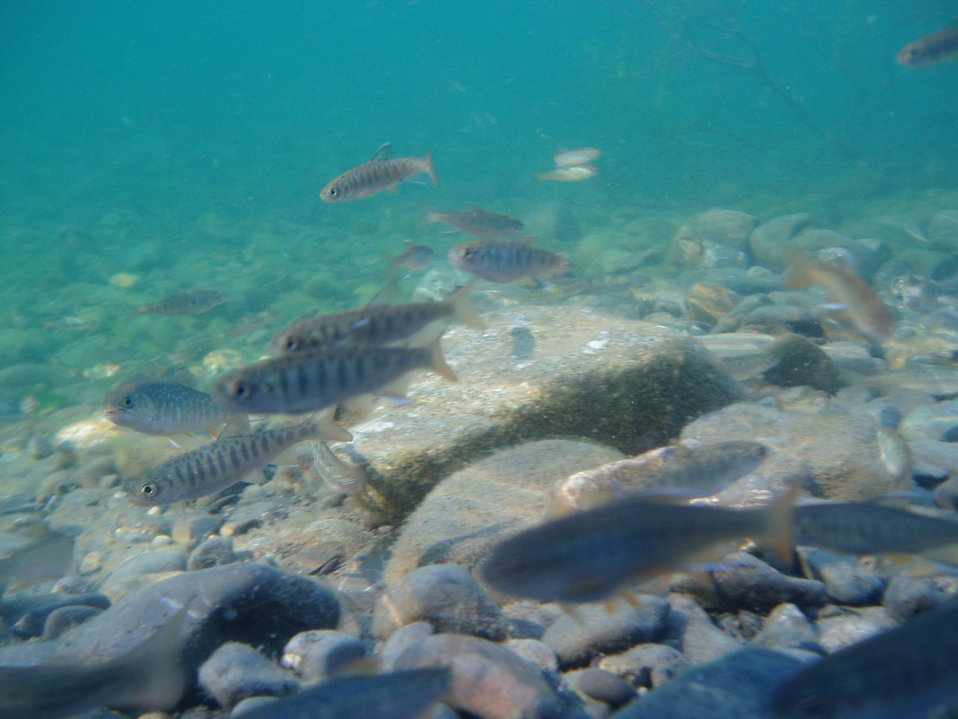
school of juvenile salmonids